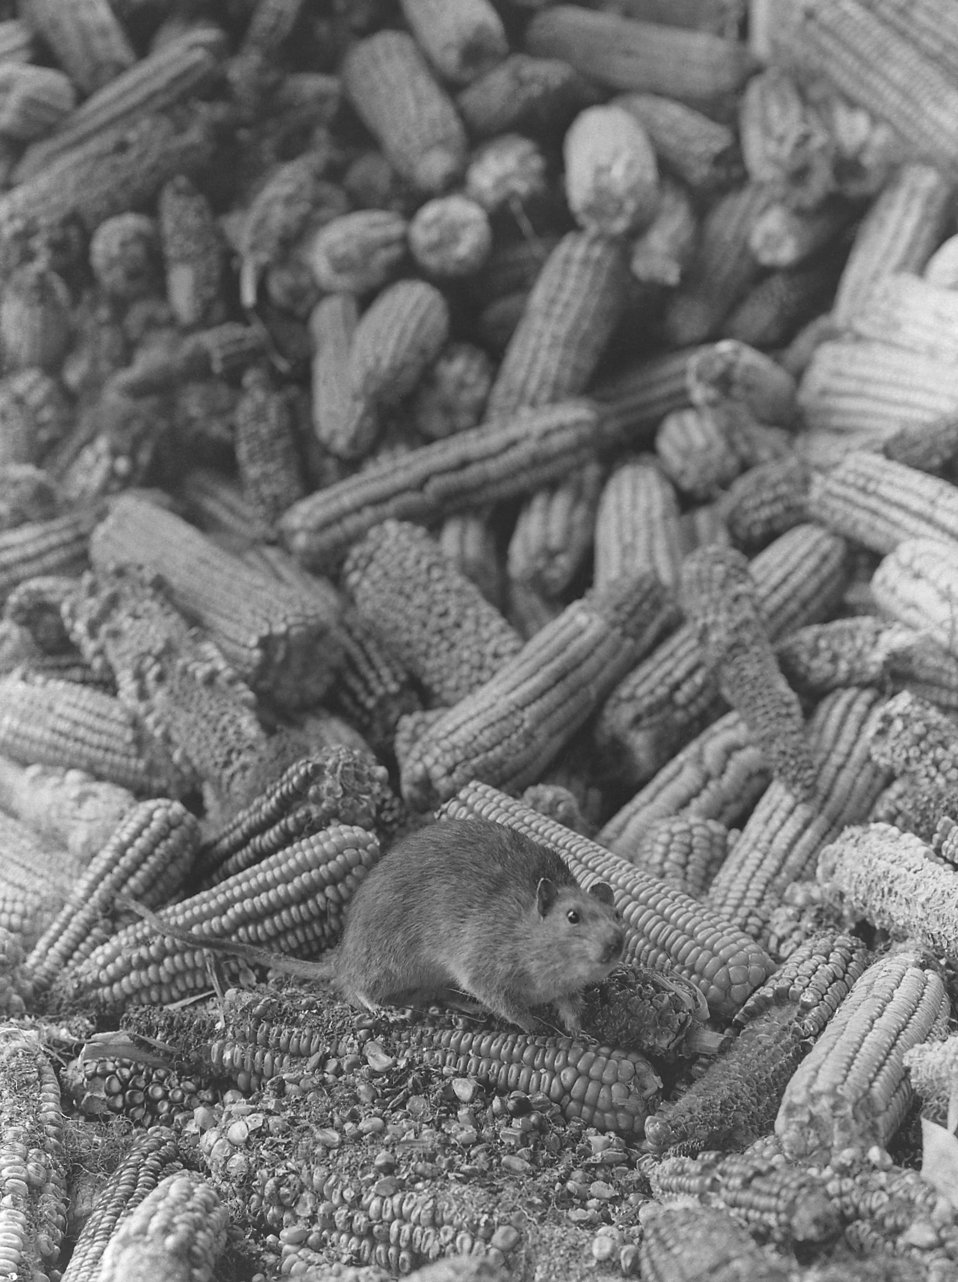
A Norway rat Rattus norvegicus in a Kansas City, Missouri corn storage bin.